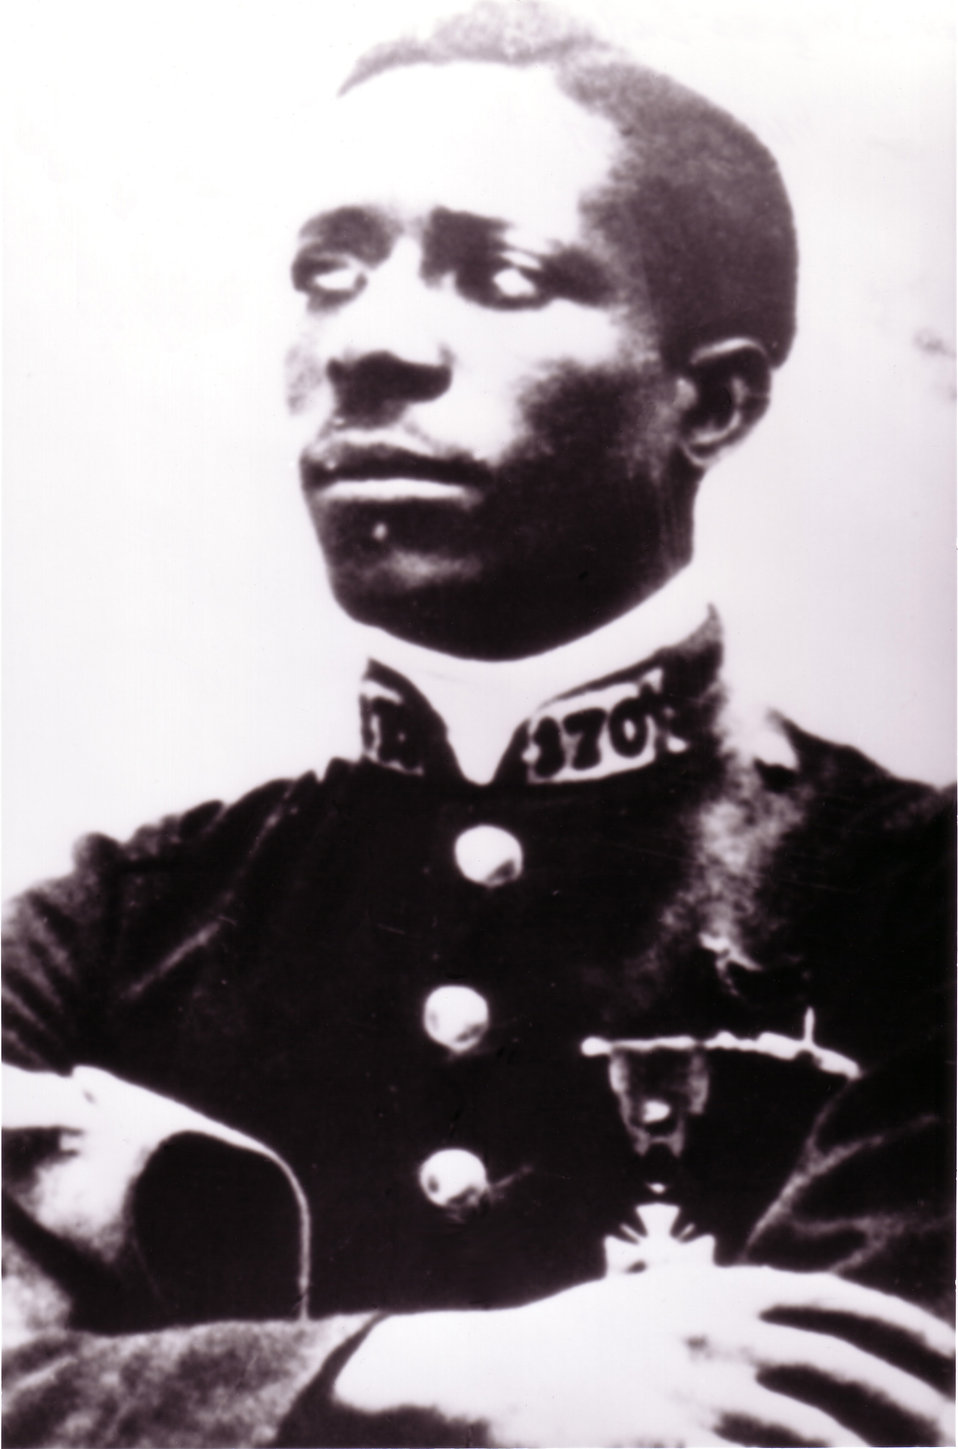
Corporal Eugene J. Bullard

EARLY YEARS -- Eugene Jacques Bullard, the first African-American combat pilot, was one of 200 Americans who flew for France in World War I.